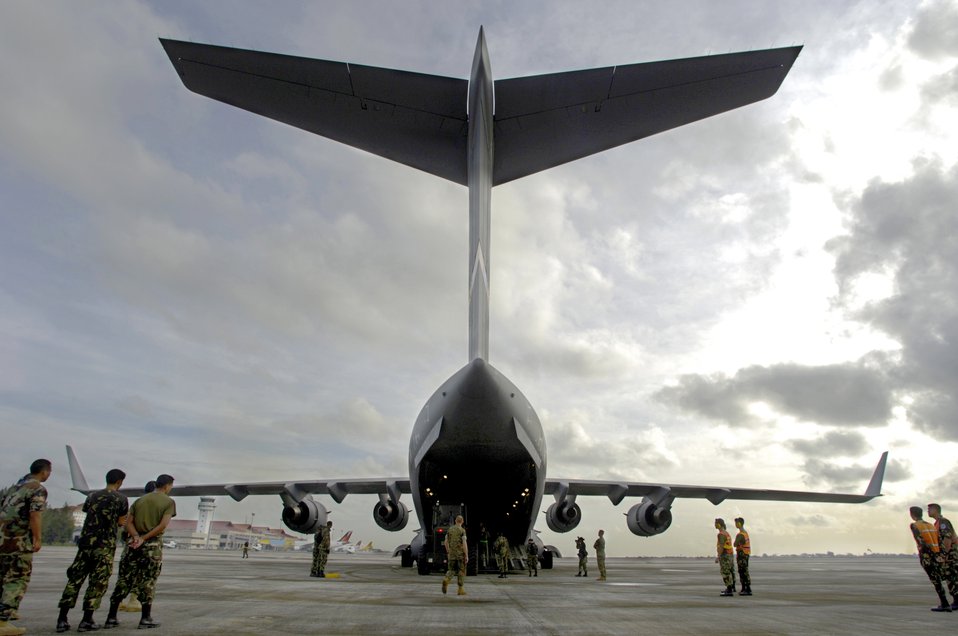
Supply delivery

MACTAN AIR BASE, Philippines (AFPN) -- American and Philippine military personnel wait to offload cargo from a C-17 Globemaster III. The C-17 squadron of active duty and Hawaii Air National Guard are flying their first contingency response mission delivering relief supplies to the Philippines.